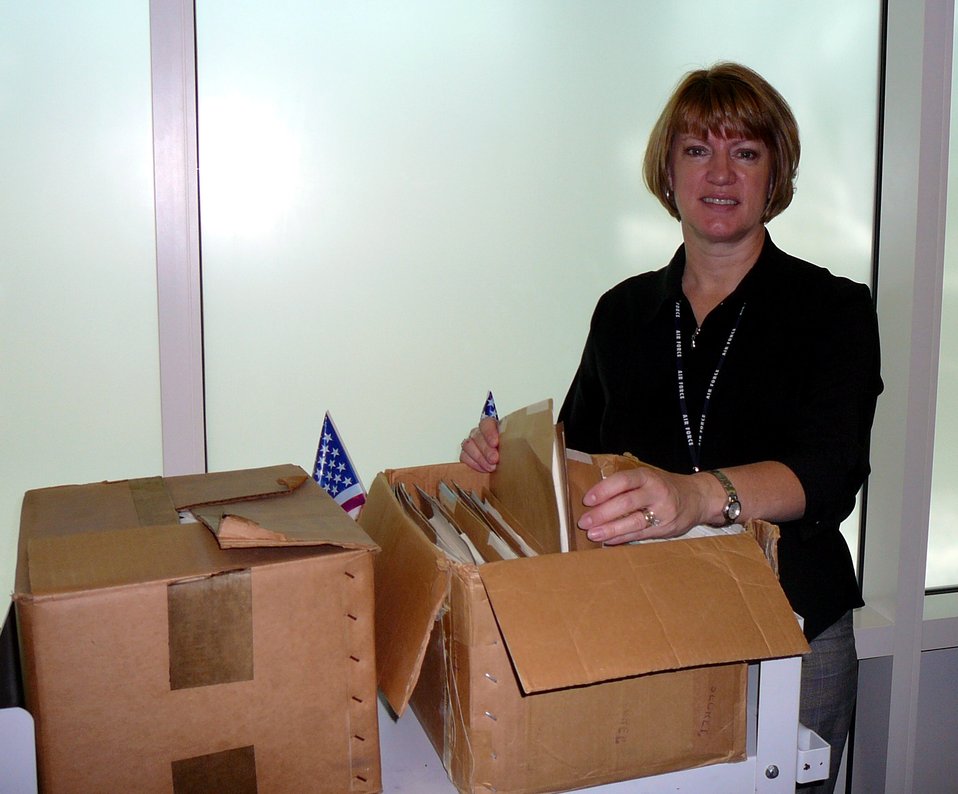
Administrator finds family photo in archives file

Mary Grabulis found quite a surprise when she discovered an old newspaper article amongst her files about her husband as a young boy recently. Mrs. Grabulis is a records declassification analyst for the Air Force Declassification Office at the National Archives and Records Administration.